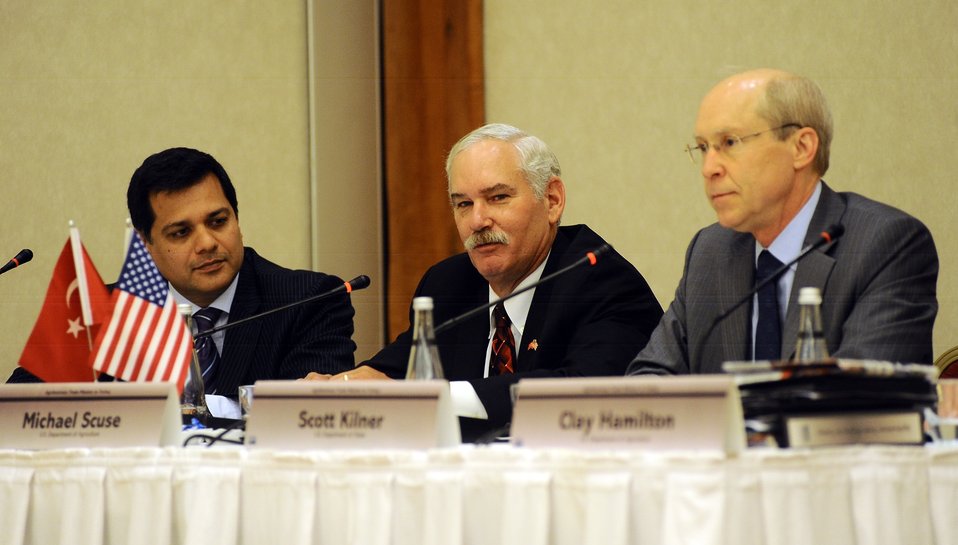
Acting Agriculture Deputy Secretary Michael Scuse heads the Executive Country Team Briefing for the U.S. Delegation at the start of the Agibusiness Trade Mission to Turkey in Istanbul, Turkey on Monday, Jun. 10, 2013. The goal of the mission is to promote U.S. agricultural exports to Turkey. Representatives from Iowa, Minnesota, Missouri, Nebraska, North Dakota, and Pennsylvania, as well as 20 U.S. companies are participating. (L to R U.S. Consulate General Istanbul Political/Economic Section Chief Patrick Hannish, Agriculture Acting Deputy Secretary Michael Scuse, and U.S. Consulate General Istanbul Consul General Scott Kilner).